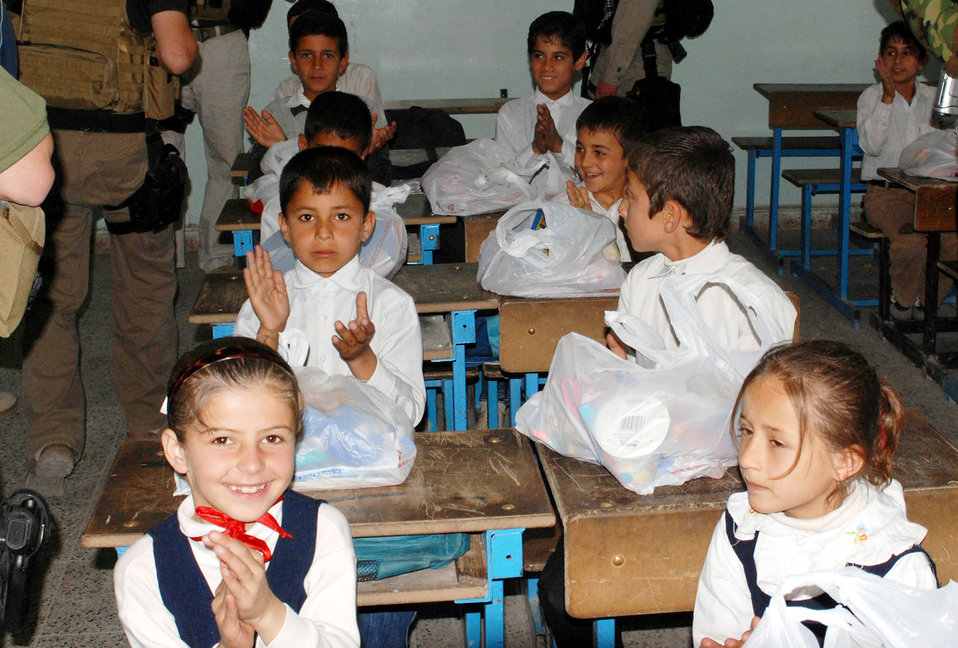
Making Iraq's future brighter: Operation School Supplies

Children at a school near Kirkuk Air Base, Iraq, show their appreciation for their new school supplies delivered by Air Force Office of Special Investigations Expeditionary Detachment 2410 April 18. This effort is part of Operation Iraqi School Supplies sponsored by the 506th Air Expeditionary Group.